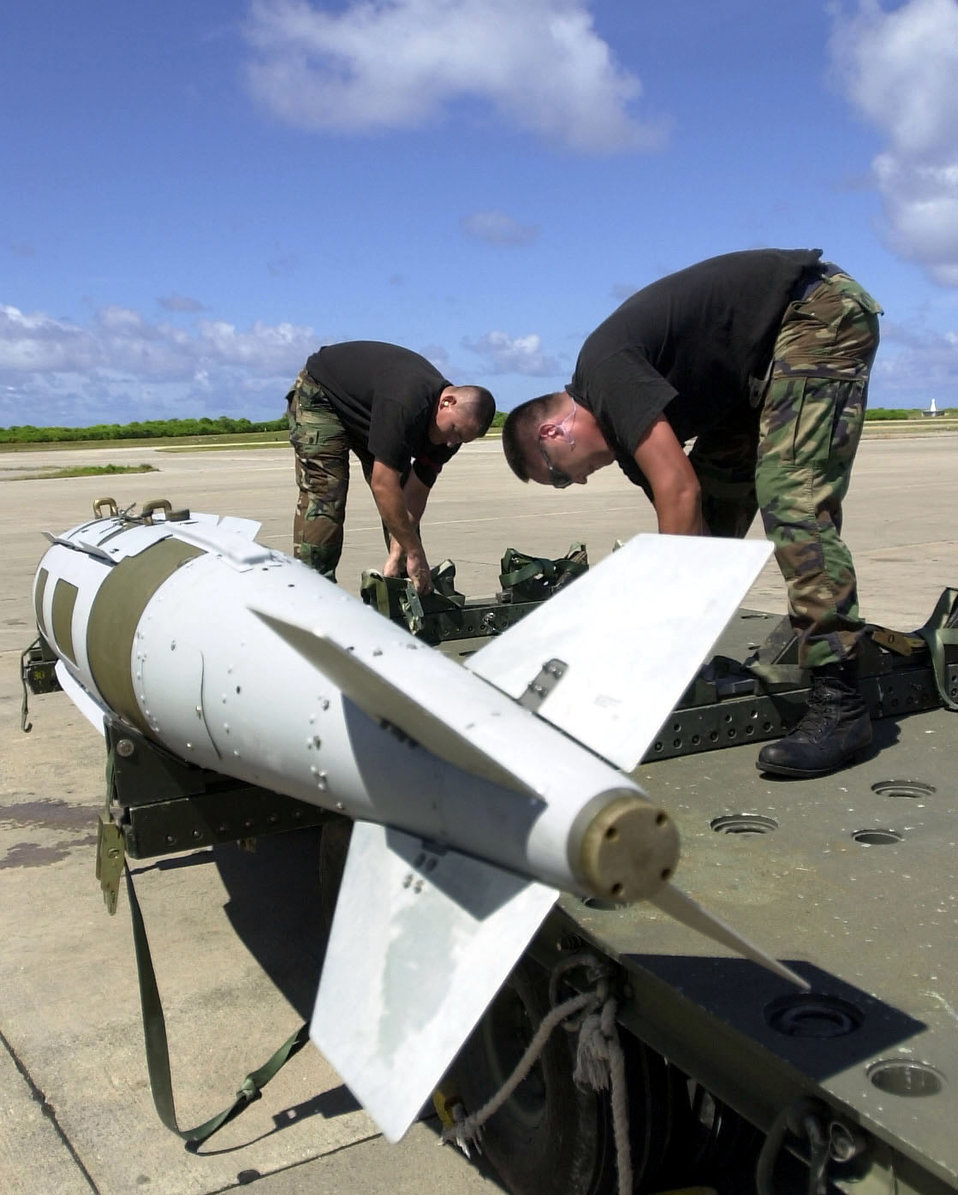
Bombs for the Lancer

OPERATION ENDURING FREEDOM -– Air Force weapons crews from the 28th Air Expeditionary Wing prepare munitions to be loaded on a B-1B Lancer. The B-1B's blended wing and body configuration, along with variable-geometry design and turbofan engines, combine to provide greater range and high speed with enhanced survivability.